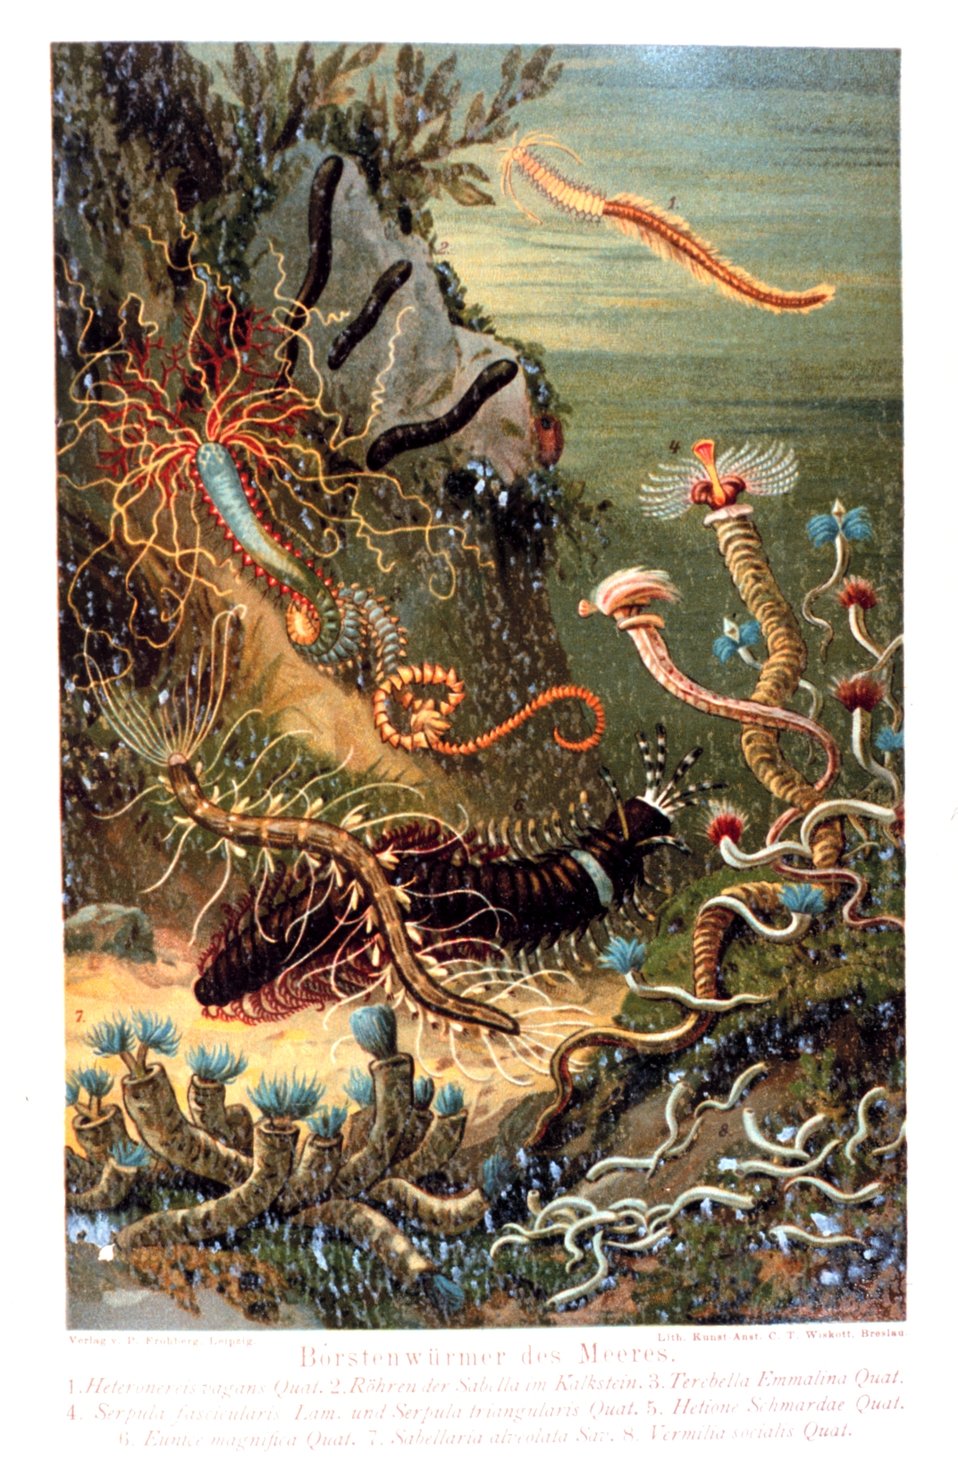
'Borstenwurmer des Meeres'. A variety of marine worms. In: 'Das Meer' by M. J. Schleiden, 1804-1881. P. 446. Library Call Number QH91.S23 1888.